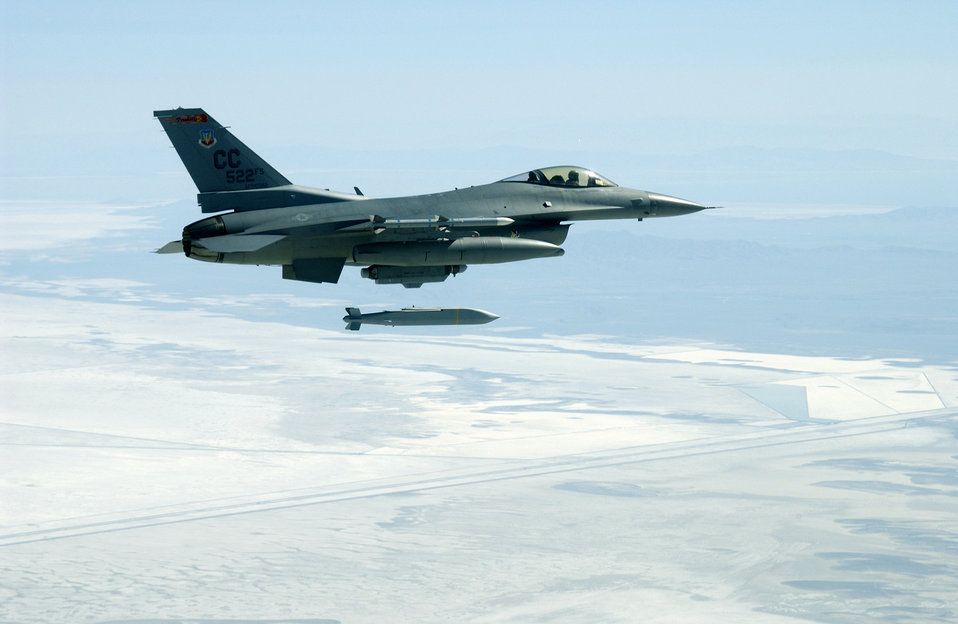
Bombs away

OVER UTAH -- An F-16C Fighting Falcon assigned to the 522nd Fighter Squadron, Cannon Air Force Base, N.M., releases an AGM-154 joint standoff weapon over the Utah Test and Training Range. The mission was part of an air-to-ground weapons system evaluation program mission commonly referred to as Combat Hammer. The squadron is deployed to Hill AFB, Utah.